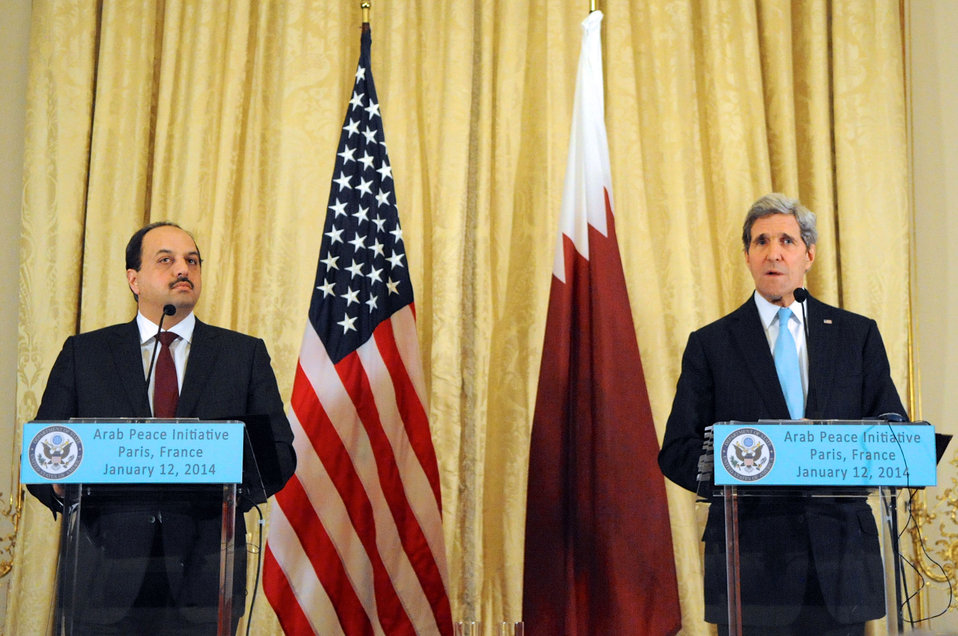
Secretary Kerry Holds a News Conference with Qatari Foreign Minister al-Attiyah

U.S. Secretary of State John Kerry speaks during a joint news conference with Qatari Foreign Minister Khalid bin Mohammad al-Attiyah after a series of meetings in Paris, France, on January 12, 2014.